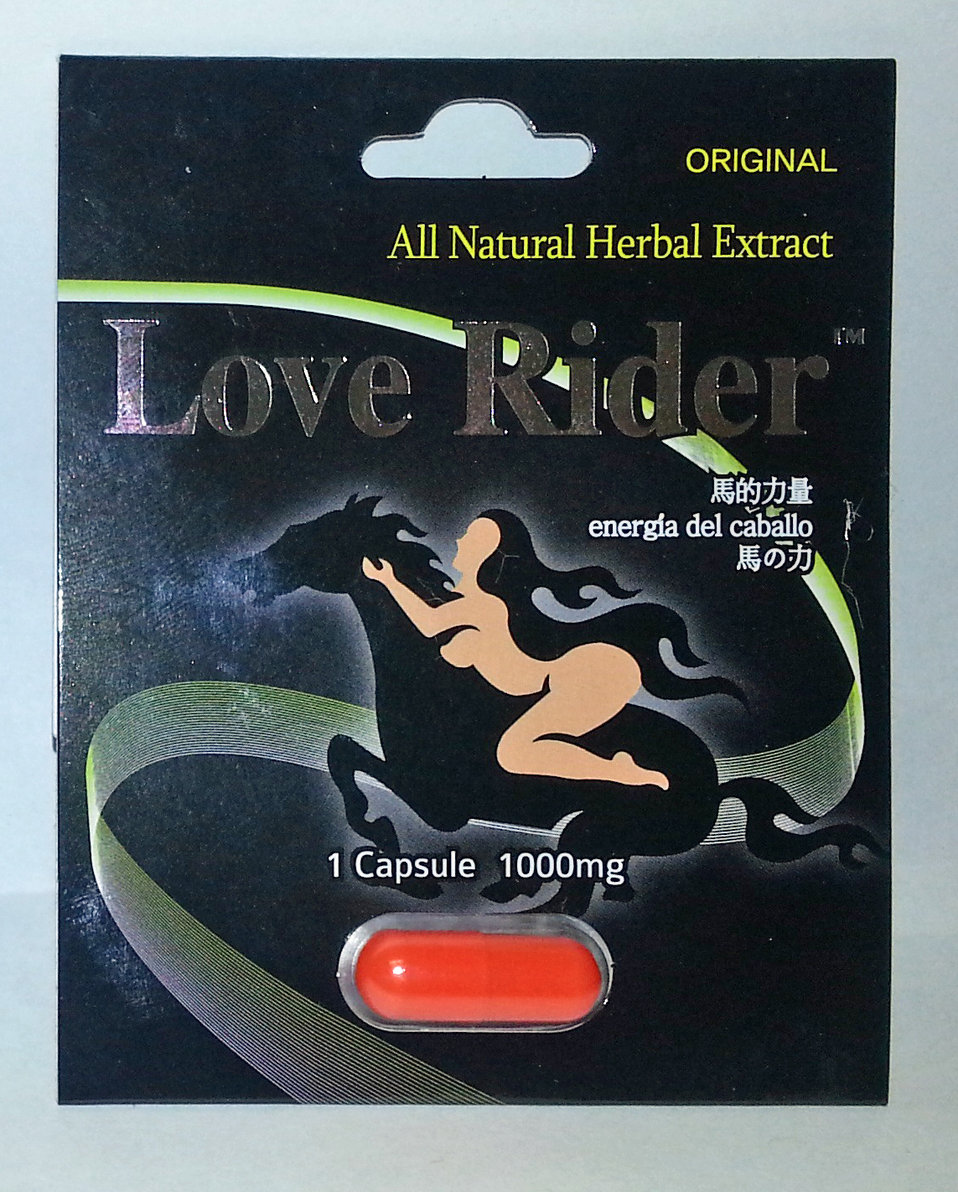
Love Rider

April 3, 2013 - The FDA is advising consumers not to purchase or use 'Love Rider,' a product promoted and sold for sexual enhancement. The product was found to contain undeclared tadalafil. For more information, go to www.fda.gov/Drugs/ResourcesForYou/Consumers/BuyingUsingMe...

And read this Consumer Update: Beware of Fraudulent ‘Dietary Supplements’